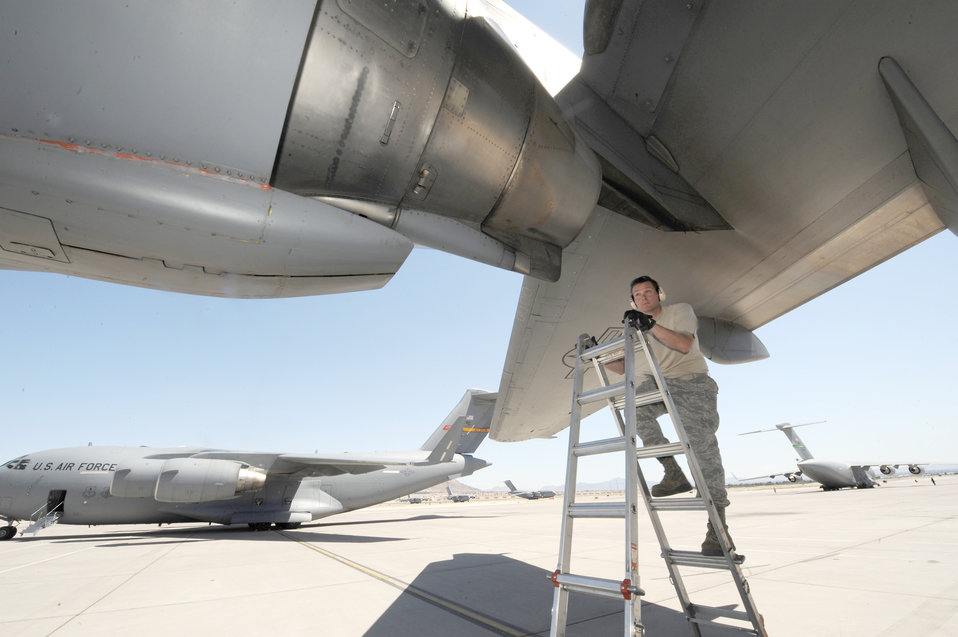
Mobility Air Forces exercise

Tech. Sgt. Patrick Remfrey performs a post flight maintenance check on a C-17 Globemaster III during the Mobility Air Forces exercise May 19, 2010, at Nellis Air Force Base, Nev. Sergeant Remfrey is crew chief assigned to the 62nd Aircraft Maintenance Squadron, at McChord AFB, Wash.